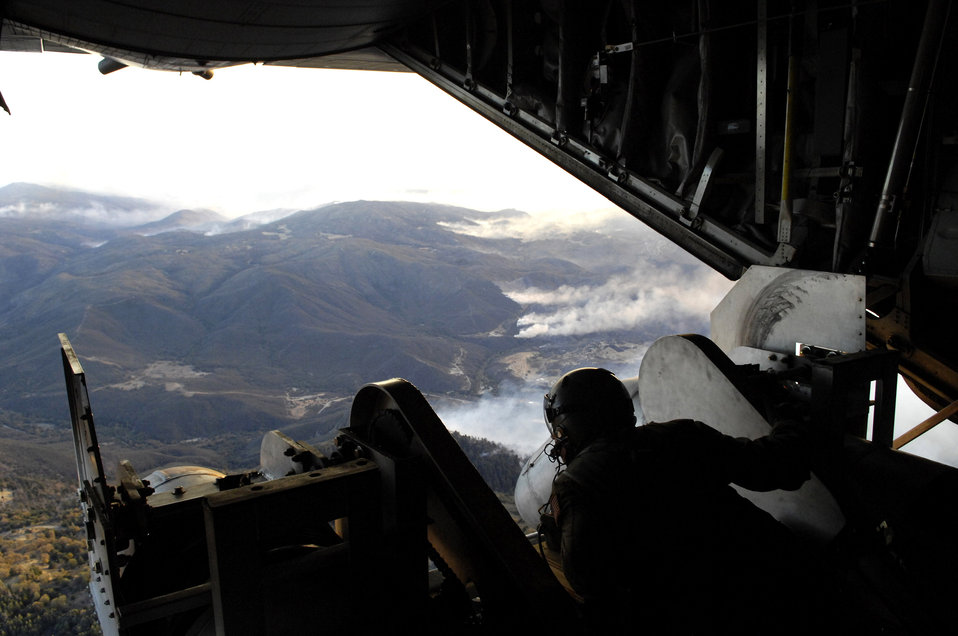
Fighting fire

Tech. Sgt. Lamont Wood checks the positioning of the nozzles prior to deploying 3,000 gallons of fire retardant over the Poomacha fire Oct. 24 in North San Diego County, Calif. The C-130 Hercules and crew are assigned to the 302nd Airlift Wing from Peterson Air Force Base, Colo.